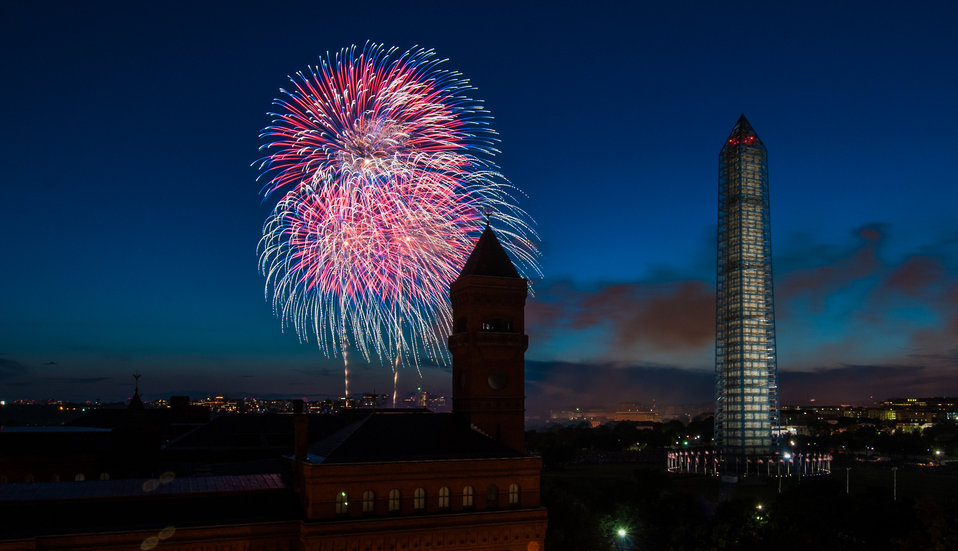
4th of July fireworks as seen from the U.S. Department of Agriculture (USDA) headquarters building, with the USDA Forest Service Yates Building in the foreground, left, and the Washington Monument in Washington, D.C., on July 4, 2013.